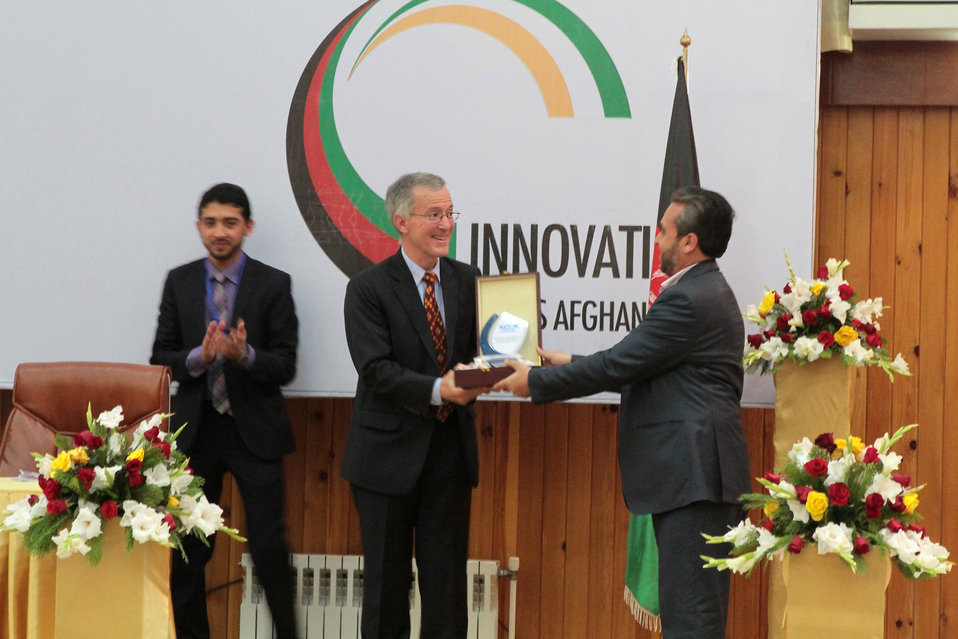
USAID Mission Director William Hammink received an award from Kabul Chamber of Commerce and Industries for his great contribution for India-Afghanistan Innovation Partnership Fair